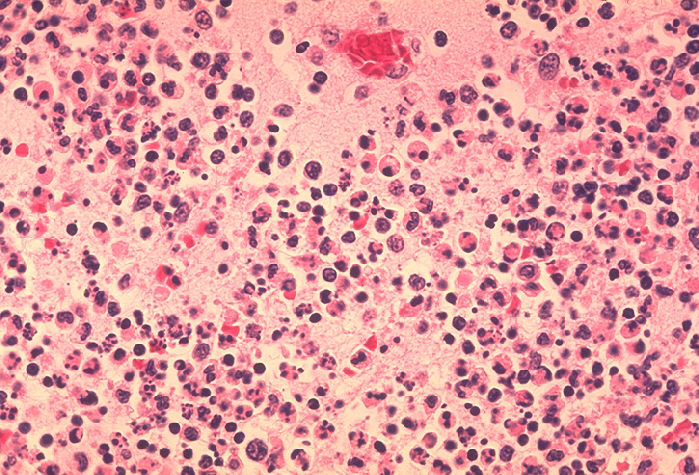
Histopathology of lymph node in fatal human plague.